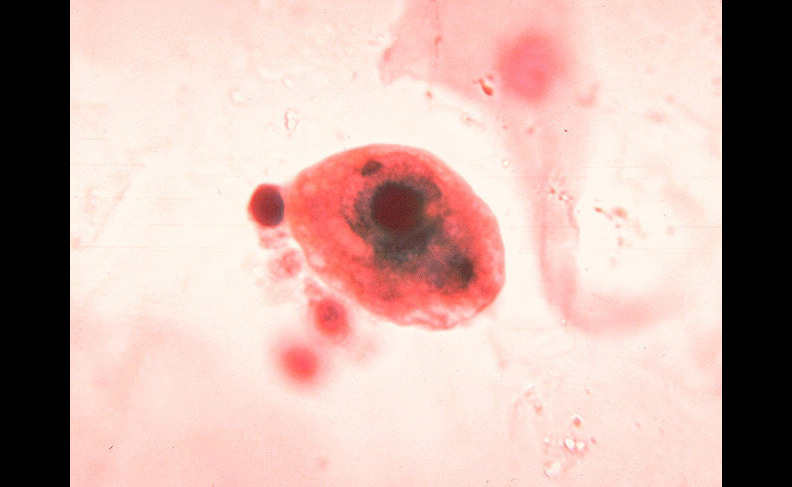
Cytomegalovirus infection of cell in urine.